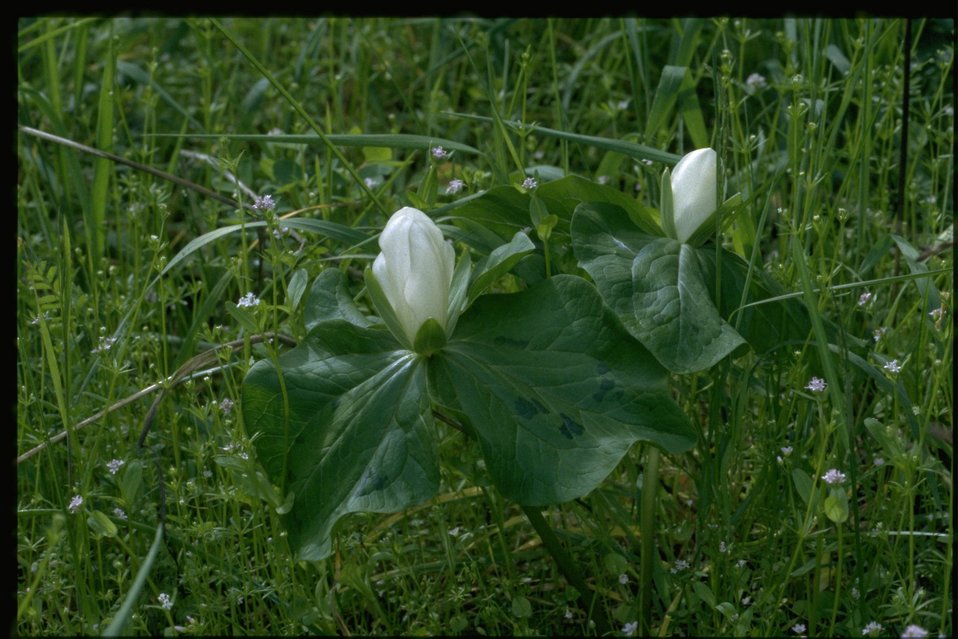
Medium shot of Trillium albidum.